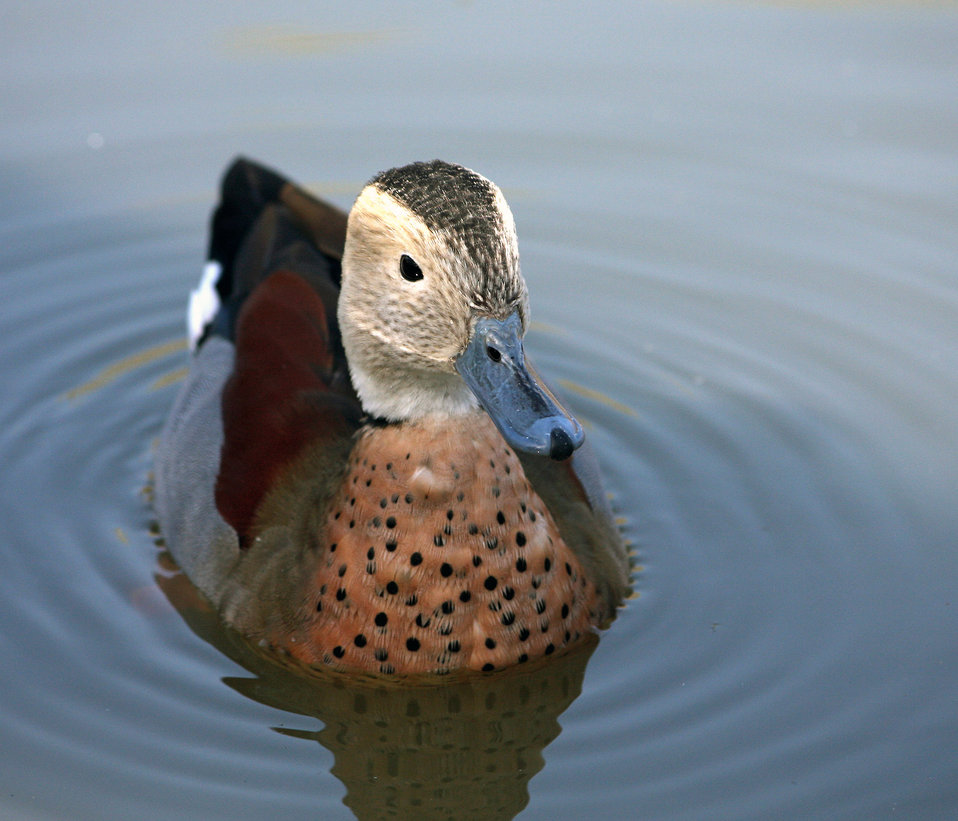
Duck ringed teal

Beautiful close-up portrait of a ringed teal duck.